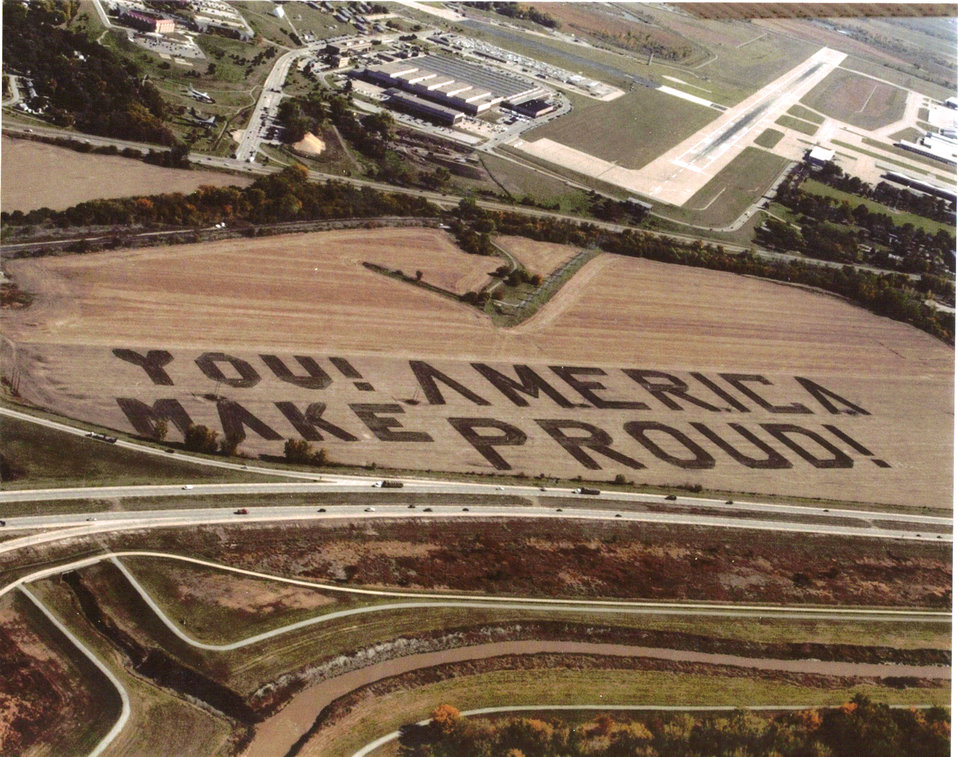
Locals send big 'thank you' to Offutt Airmen

Every year, a message appears in local fields near Offutt Air Force Base, Neb., for Airmen to read as they fly overhead. Two fields are used to communicate these thank-you notes. This year, the message reads